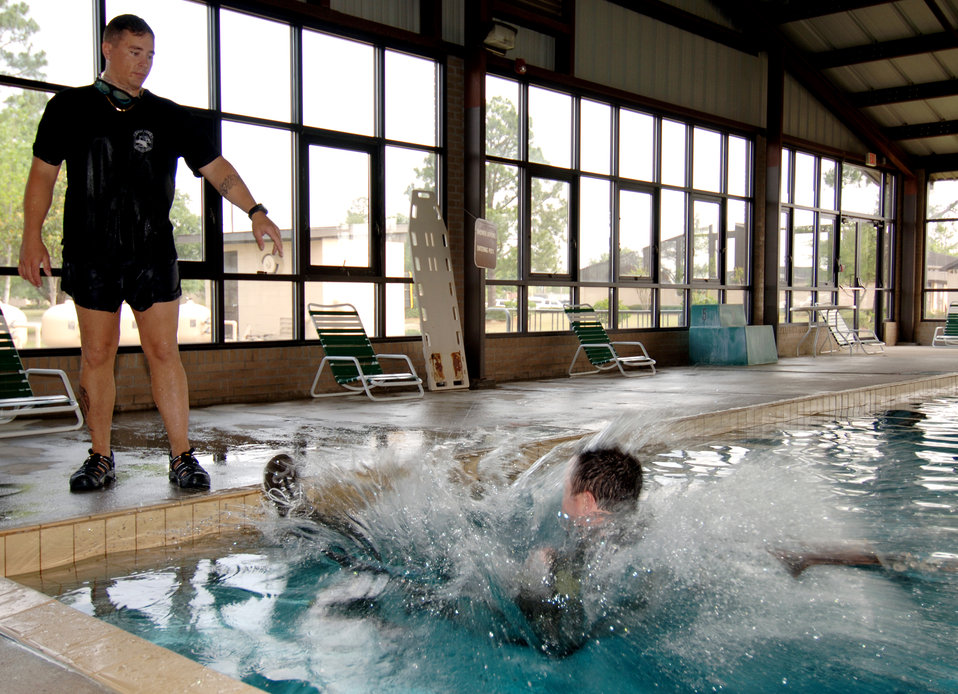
SERE-us business

Tech. Sgt. Teddy Allison watches as Capt. Christian Barnes is pulled by a harness during water survival training at Moody Air Force Base, Ga., on Friday, May 5, 2006. Captain Barnes tried to remove the harness while being dragged through the water, simulating the effects of the wind when jumping into the ocean. Sergeant Allison is a survival, evasion, resistance and escape instructor with the 347th Operations Support Squadron; Captain Barnes is with the 71st Rescue Squadron.